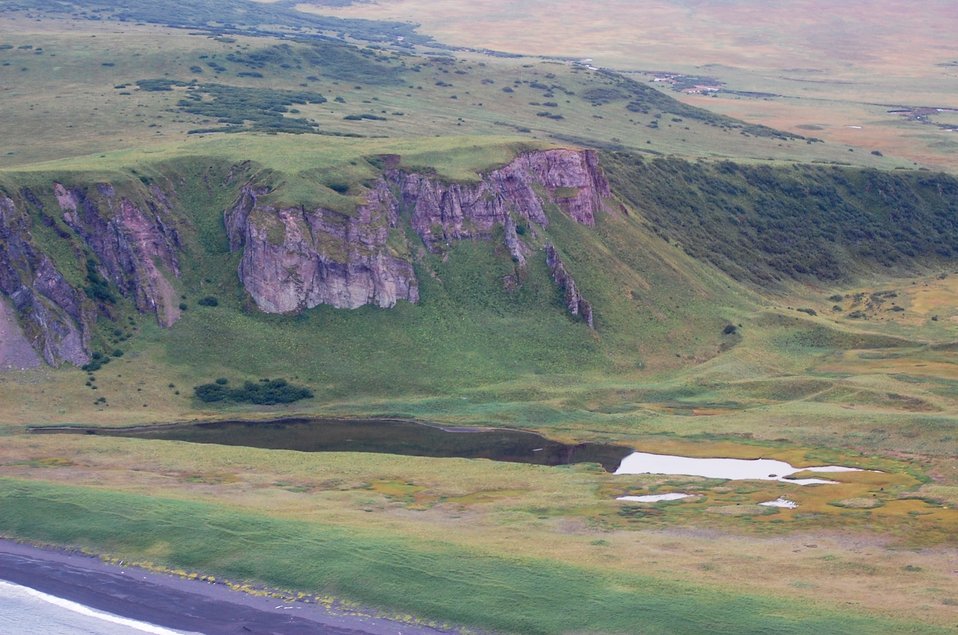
Unimak Landscapes

SE Unimak Island, Alaska Maritime National Wildlife Refuge